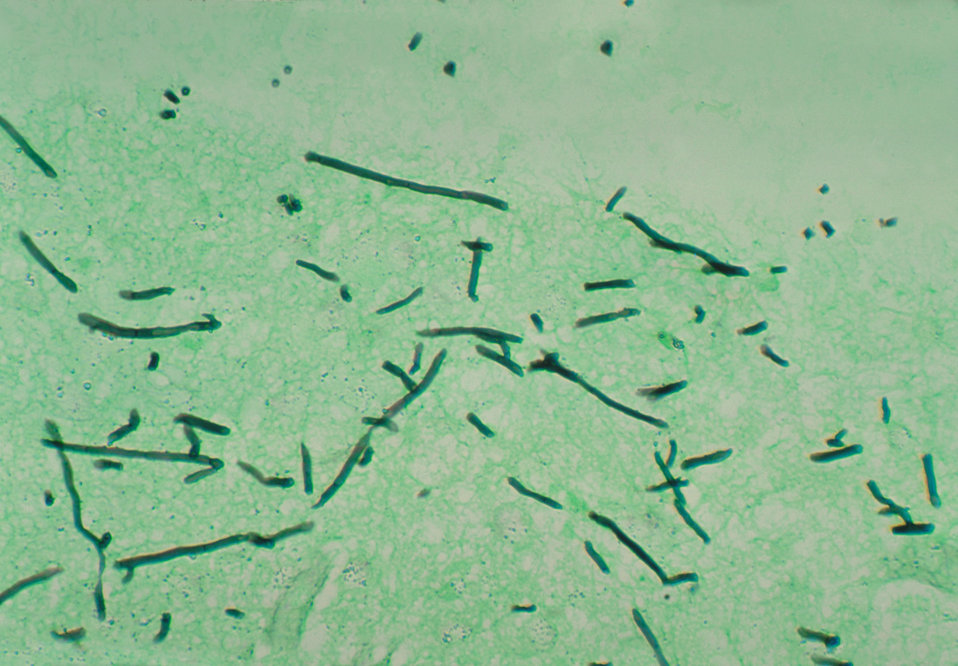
A micrograph of a pigeon brain using methenamine silver stain, revealing the presence of the fungus Ochroconis gallopavum, formerly Dactylaria gallopava.